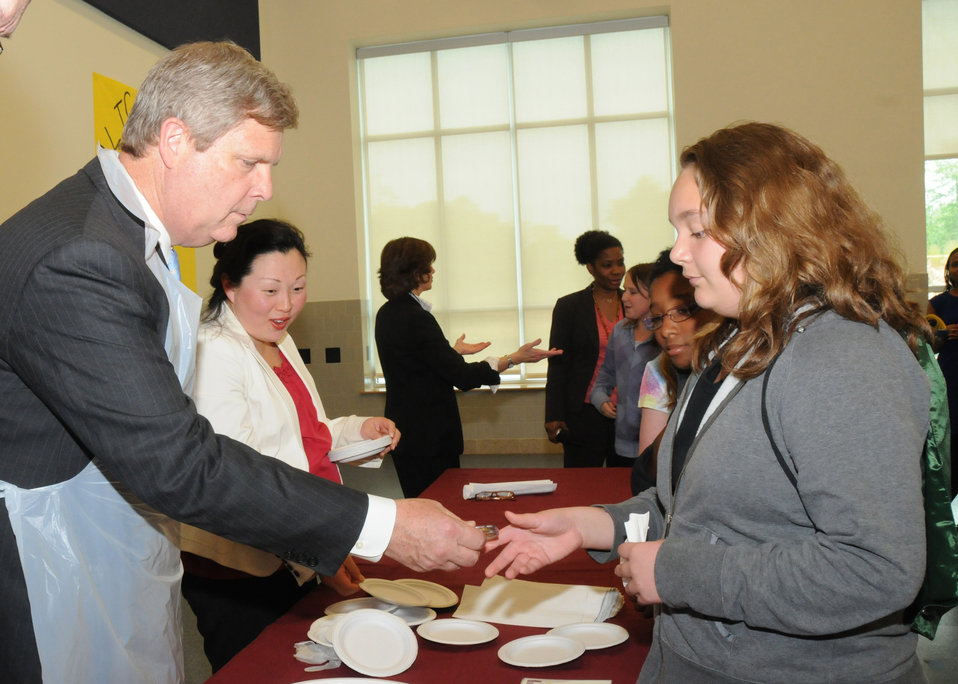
Agriculture Secretary Tom Vilsack serves a healthy snack of roasted garlic cauliflower with olive oil to 6th grade students at the Alice Deal Middle School in Northwest Washington, D.C., on Thursday, May 13, 2010. USDA photo 10di1358-220.